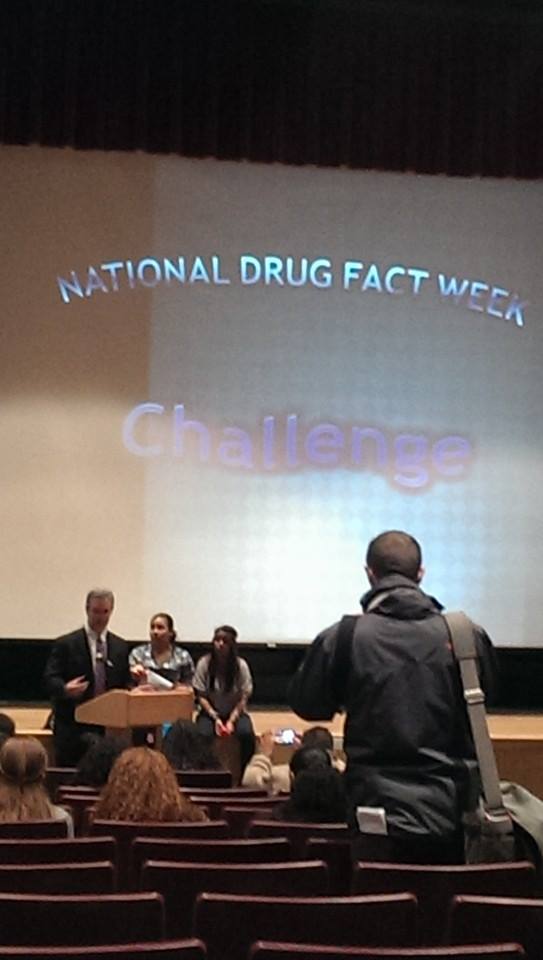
2014 National Drug Facts Week in Fitchburg

Fitchburg Community Action Team (FCAT) held an after school IQ challenge event as part of its participation in National Drug Facts Week. FCAT joins teens across the U.S. in week-long effort to shatter the myths on drugs Fitchburg, MA. — As part of the NDFW celebration, Fitchburg students hosted a presentation, designed by youth, for youth, to increase awareness of drugs and drug abuse.
Students held a special community assembly at Fitchburg High School.